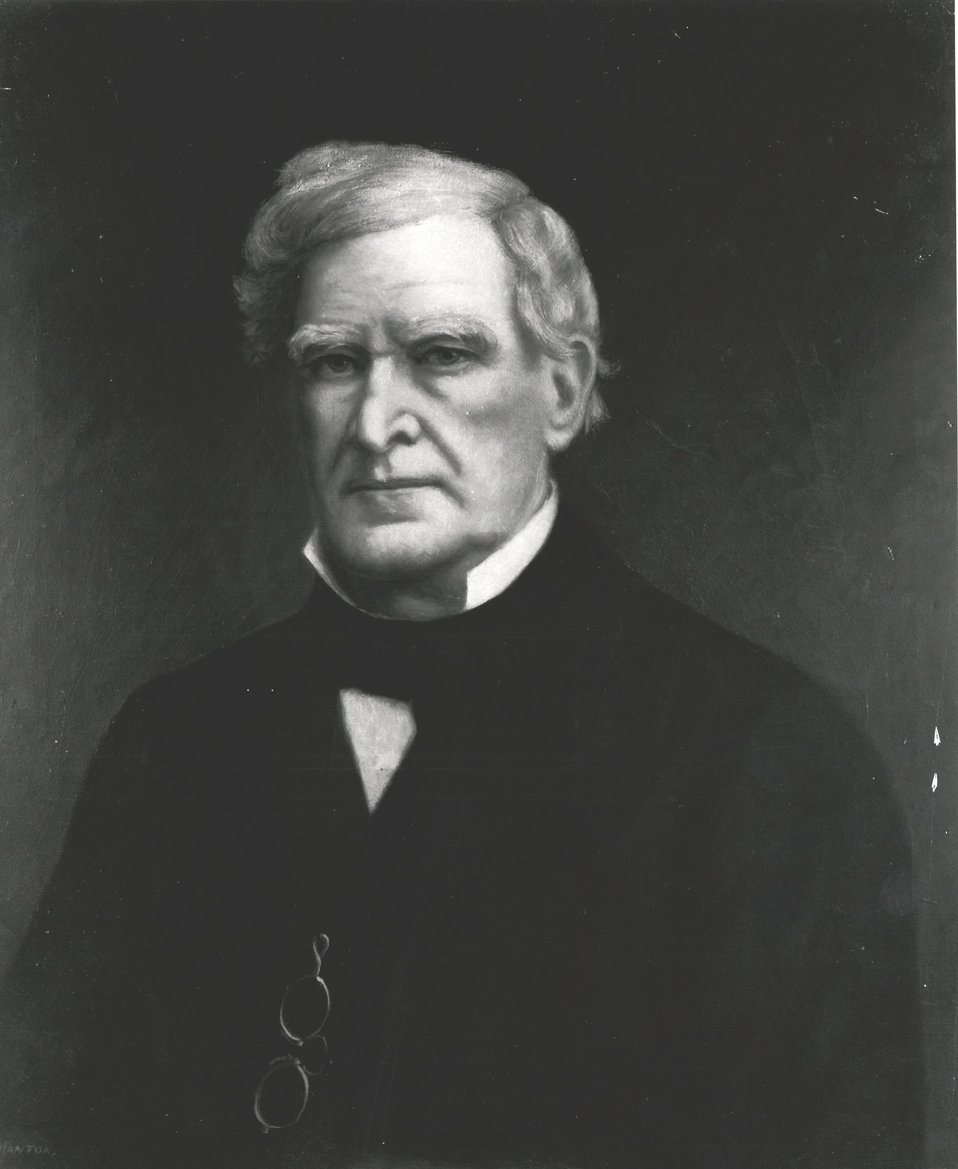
Jeremiah S. Black, U.S. Secretary of State, December 17, 1860 to March 5, 1861